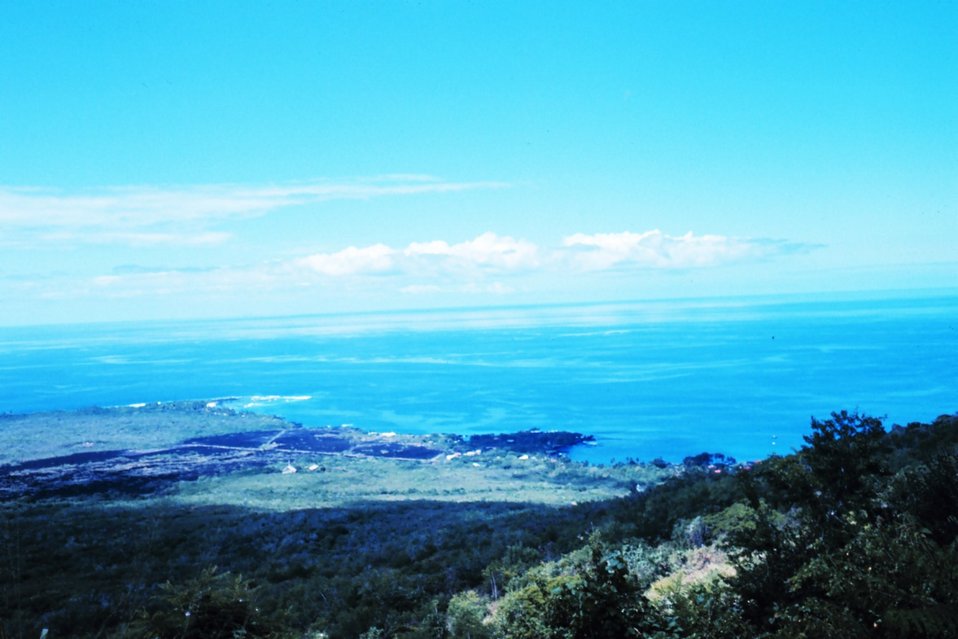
Kealakekua Bay